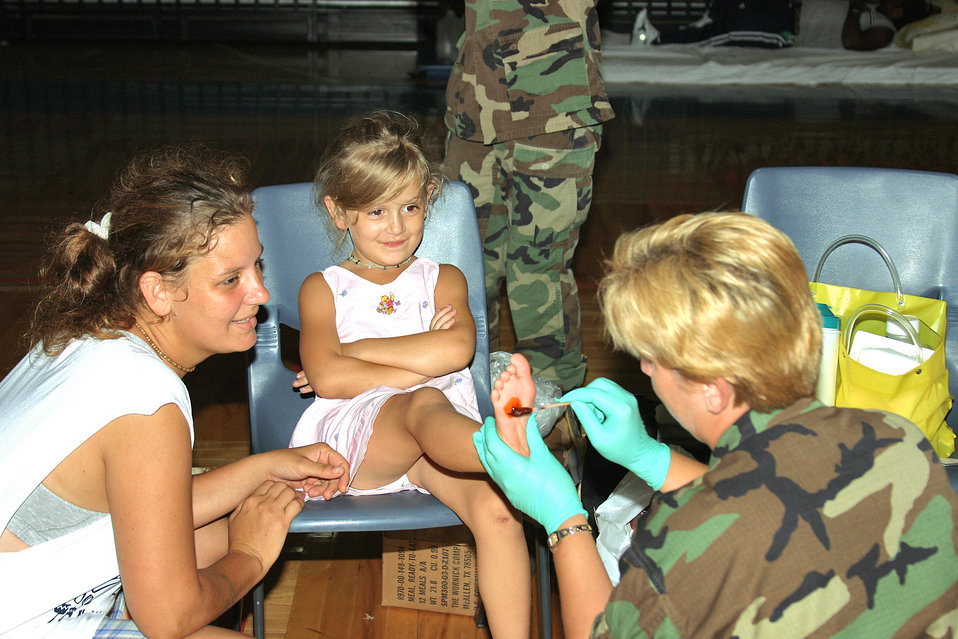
Keesler medical aid reaches community neighbors

BILOXI, Miss. -- Capt. Tracey Gosser removes glass from the foot of 5-year-old Alexes Wisniewski while her mother, Patter, looks on. Captain Gosser is part of a medical team from nearby Keesler Air Force Base that travels to local shelters to provide medical care. She is the officer in charge of the 81st Medical Group's neonatal intensive care unit.